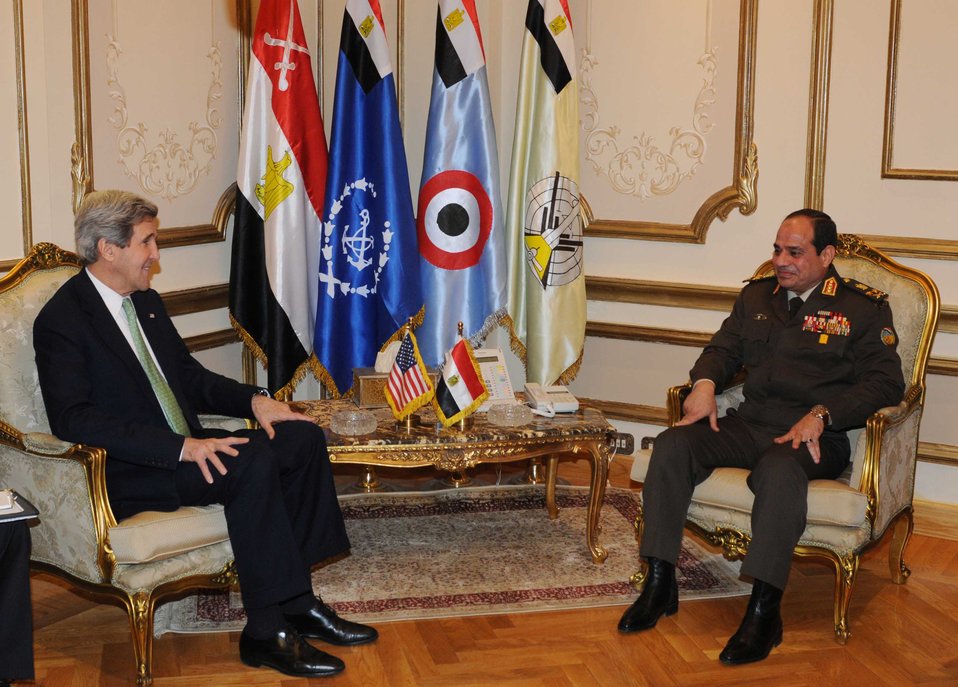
Secretary Kerry Meets With Egyptian Defense Minister al-Sisi

U.S. Secretary of State John Kerry meets with Egyptian Defense Minister Abdul Fatah Khalil al-Sisi in Cairo, Egypt, on March 3, 2013.